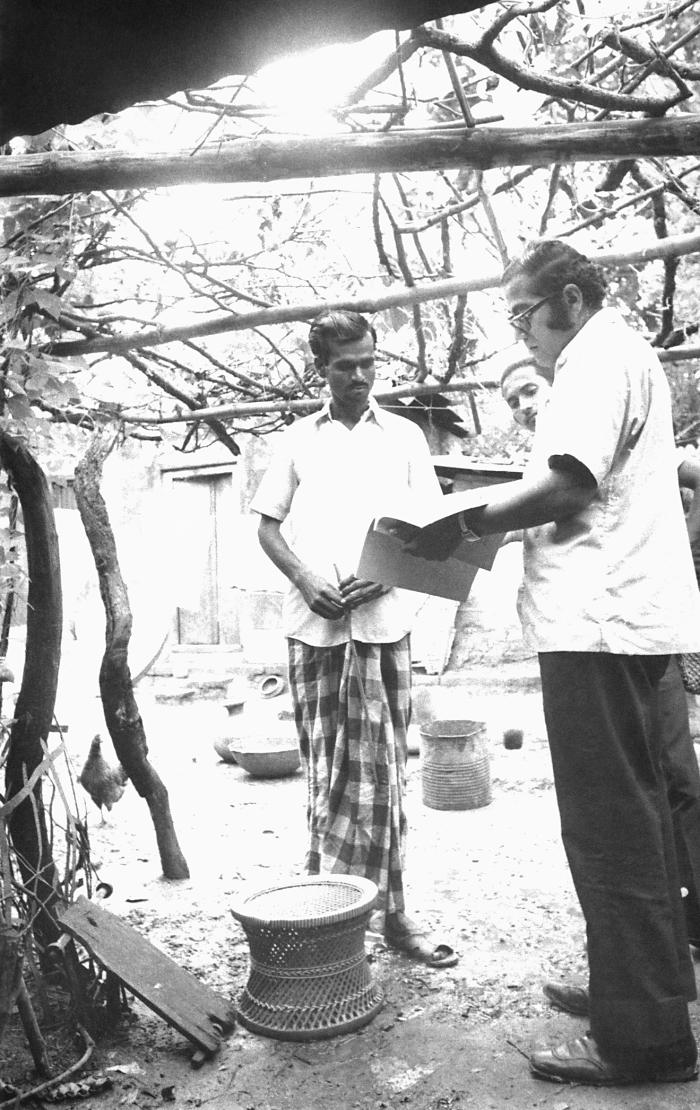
This image depicted World Health Organization (WHO) epidemiologists Dr. Ali Mourad, and an Egyptian associate discussing the 'smallpox containment book' with a community volunteer (left). The containment book recorded all of the names of anyone living in, or near an infected home, and subsequently all those listed were vaccinated against smallpox. Those vaccinated were followed until a 'successful' vaccination was observed.Local residents who became resident vaccinators, played a profound role in achieving a successful outcome to the eradication program. As locals, they were viewed as familiar, and trusted, and spoke the local dialect, thereby, facilitating enhanced communication with fellow inhabitants.